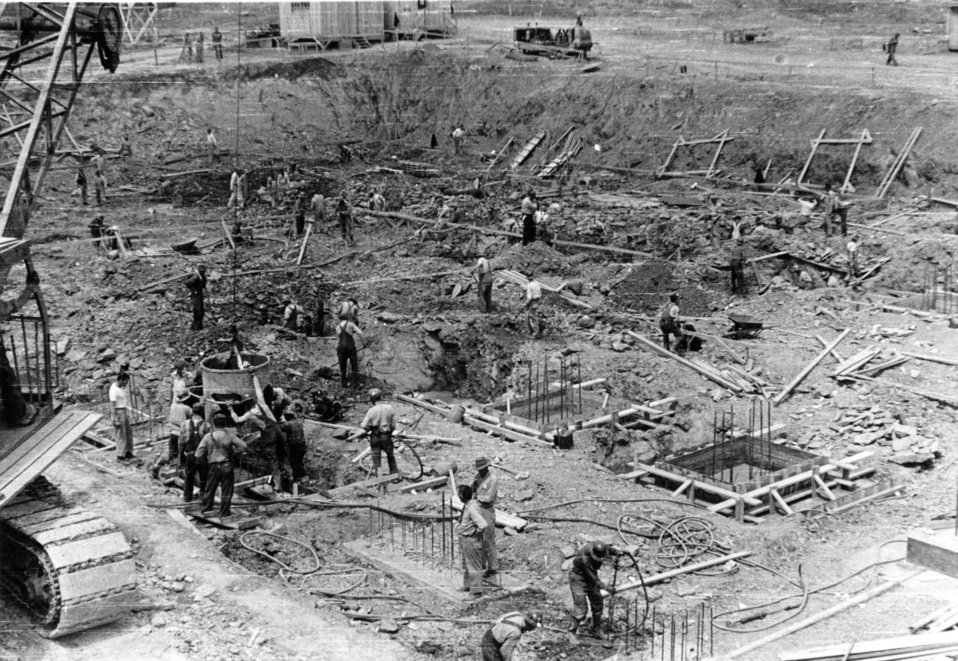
Construction activity at Oak Ridge